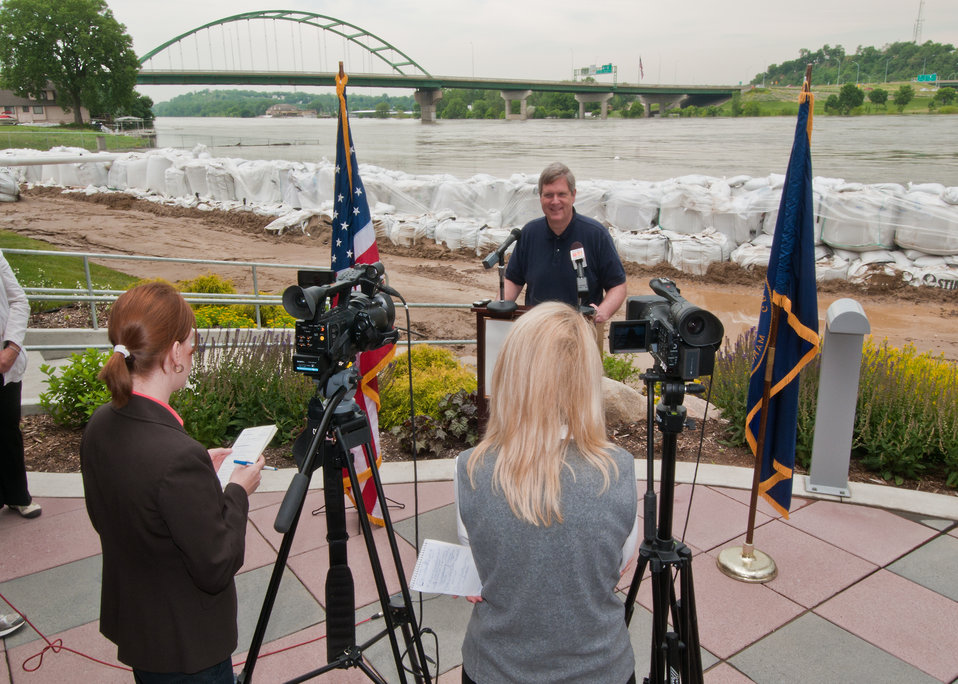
Agriculture Secretary Tom Vilsack met with local and regional media after a town hall meeting at the Marina Inn in South Sioux City, Nebraska Fri., June 17, 2011 on the floodwaters along the Missouri River affecting Iowa and Nebraska. The goal of the meeting with the producers and community leaders is to get a firsthand look and provide information back to Washington to better deliver disaster programs quickly to effectively respond to this disaster. The meeting provided the information necessary for USDA agencies to implement programs to assist producers as they assess recovery efforts. USDA administers many programs to assist with recovery in rural areas reeling from natural disasters.